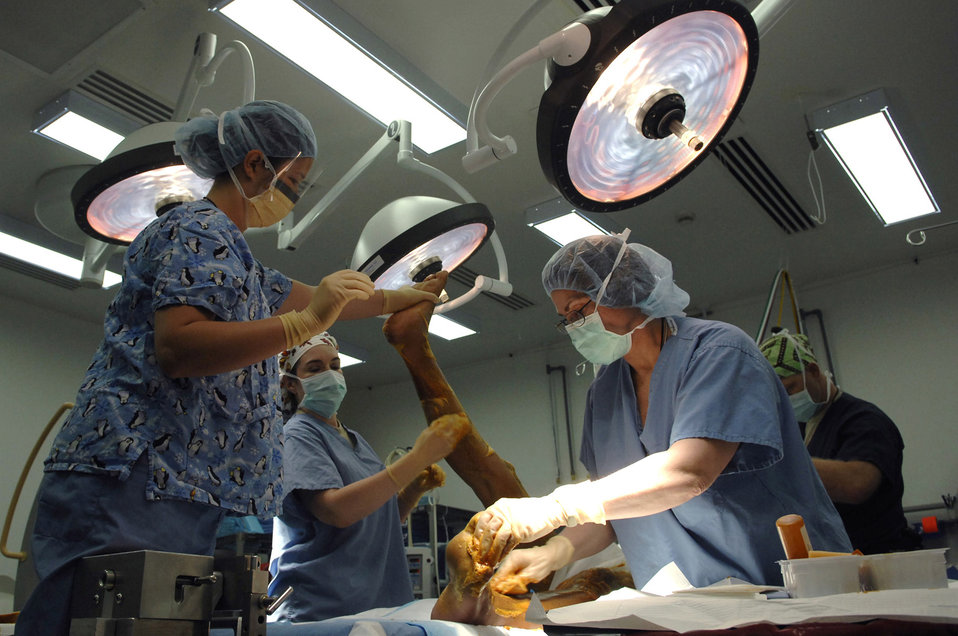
A new leg to stand on

Orthopedic technicians scrub down the legs of an Iraqi policeman July 2 at Joint Base Balad, Iraq, prior to surgery. A betadine scrub of all surgical surfaces is critical to preventing infections and aiding in the recovery of the patient. The technicians are with the 332nd Expeditionary Medical Operations Squadron.